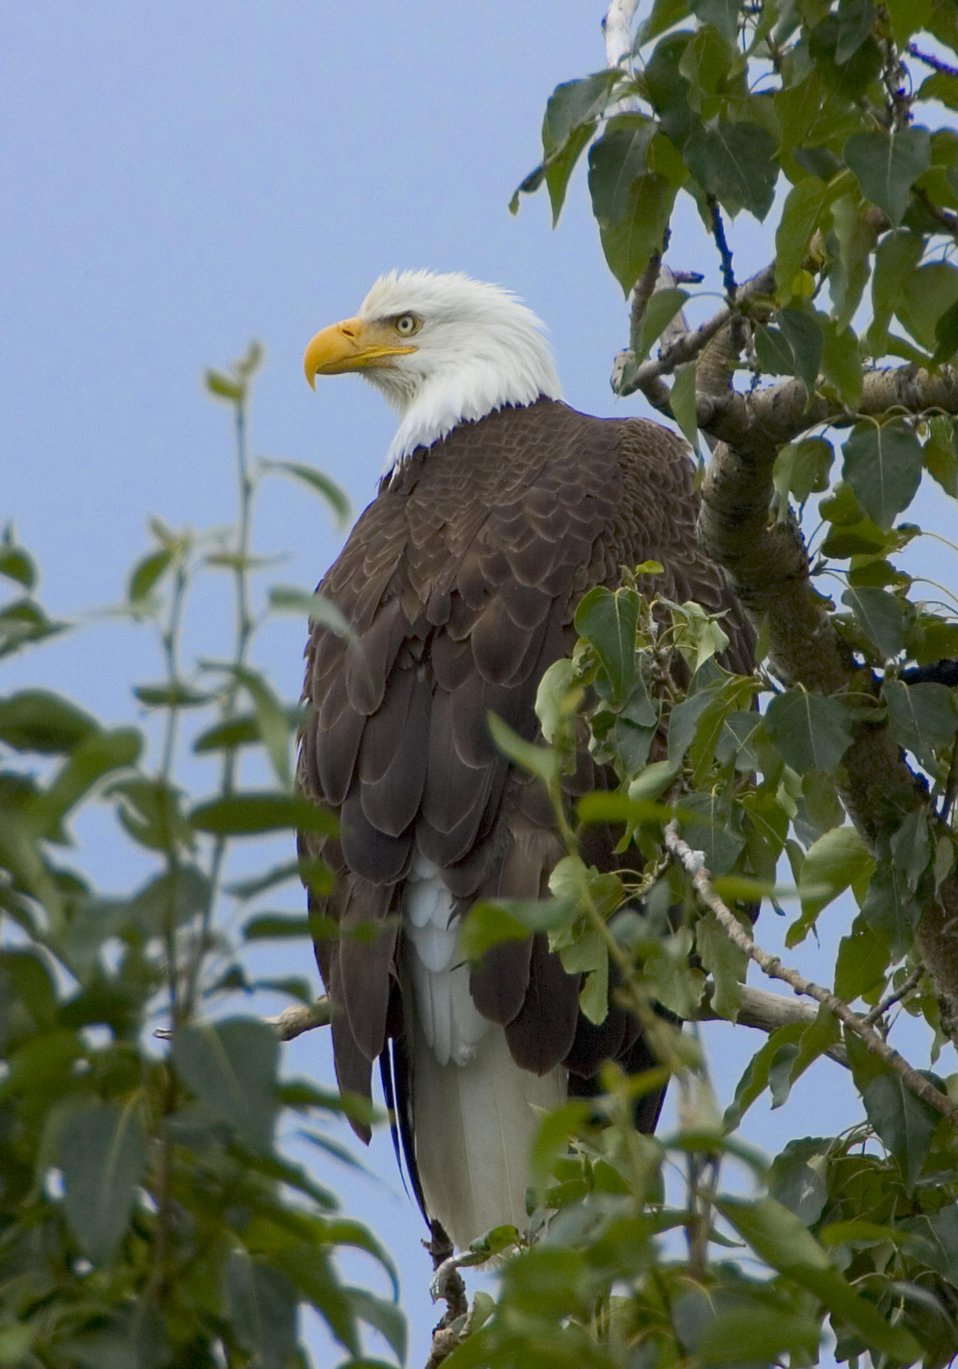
KOD Hildebrand (2)

Kodiak National Wildlife Refuge- Wildlife